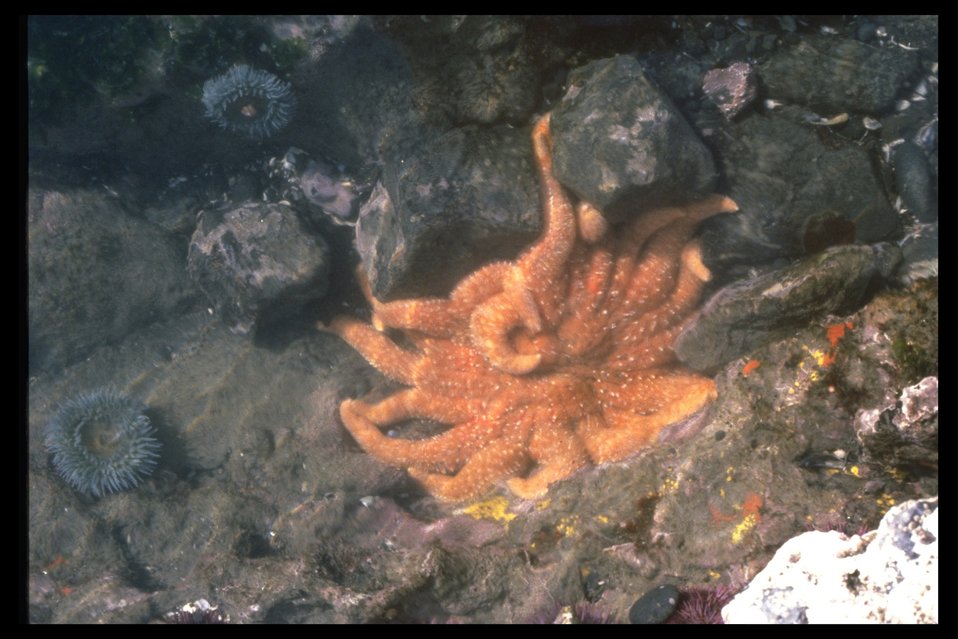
Sunflower Star.